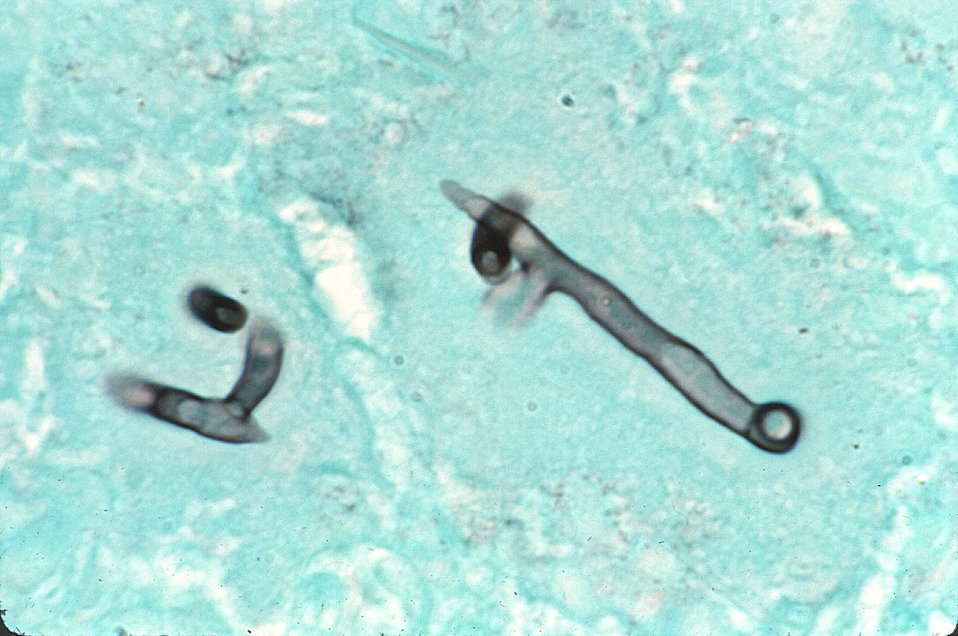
Under a magnification of 320X, this photomicrograph revealed some of the ultrastructural morphology exhibited by Exserohilum rostrat fungal organisms, highlighting the organism's mycelial filamentous components.